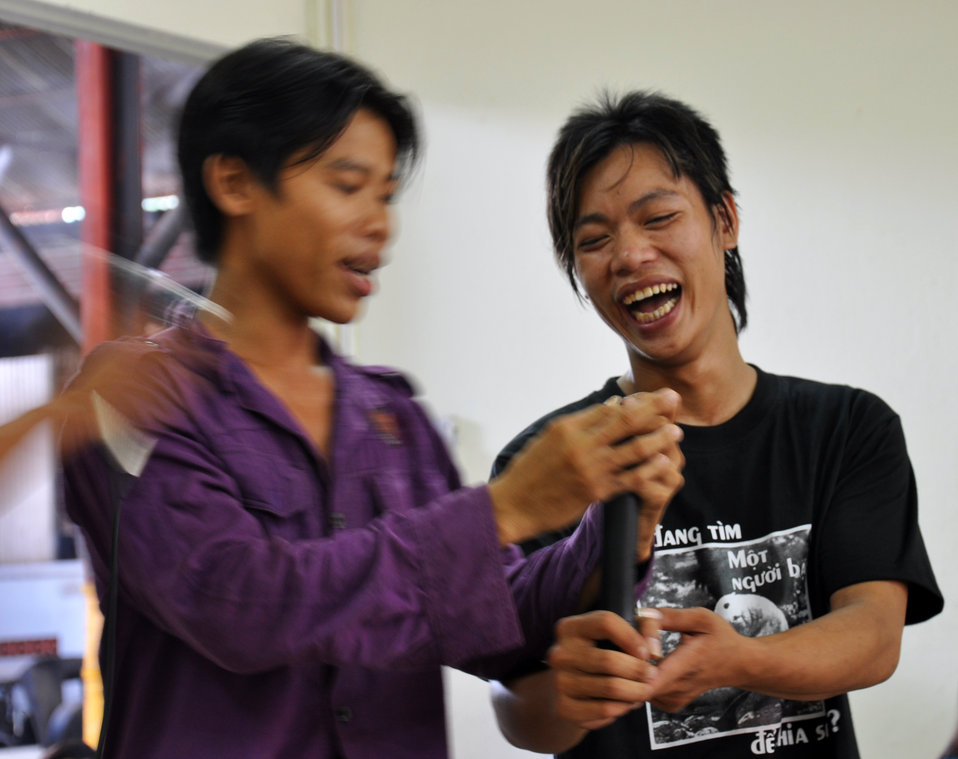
International Youth Day in Vietnam: USAID, Partners, Take to the Streets

Through Project NAM, a USAID-funded activity through the U.S. President's Emergency Fund for AIDS Relief and Pact, more than 7,000 most-at-risk youth have transformed their lives and those of their peers. Implemented by Save the Children, Project NAM works with civil society organizations to reach young men and women on the streets in six cities across Vietnam.